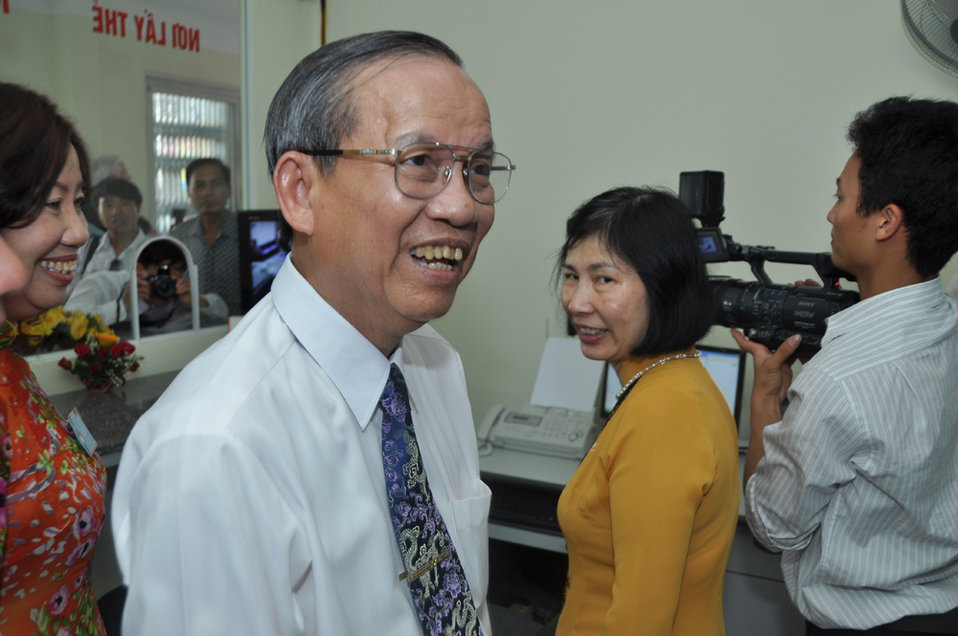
Co-pay Methadone Treatment Center Opens in Hai Phong on June 18, 2011

Deputy Prime Minister Truong Vinh Trong.